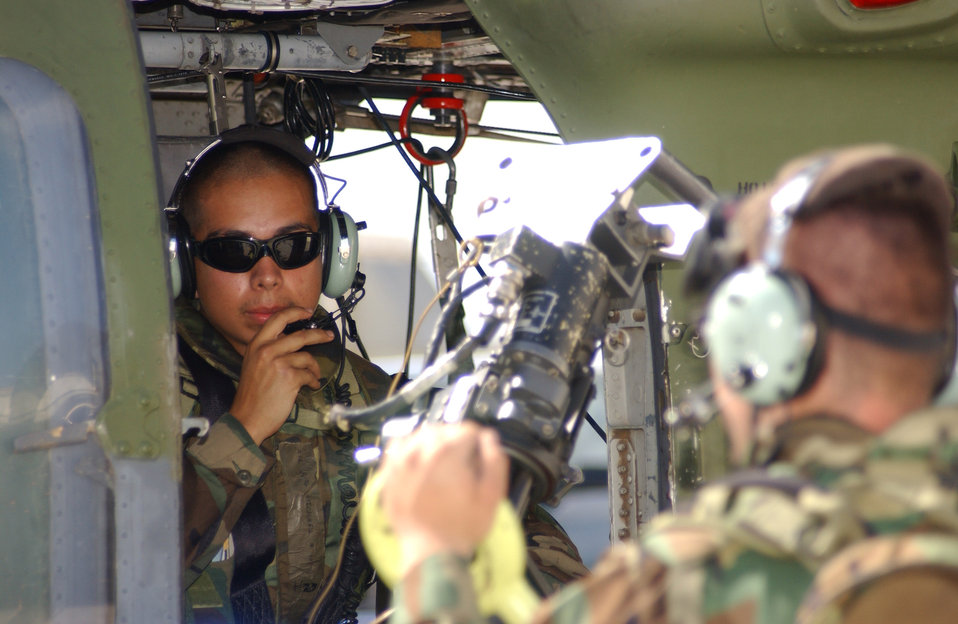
Beverly High 06-3

Airman 1st Class Michael Soto checks communications with pilots before engine start-up as Senior Airman Bryan LoPorto stands ready as fire guard with an extinguisher at Kadena Air Base, Japan, Sept. 12. Both Airmen are wearing force protection gear as part of a week-long operational readiness exercise.